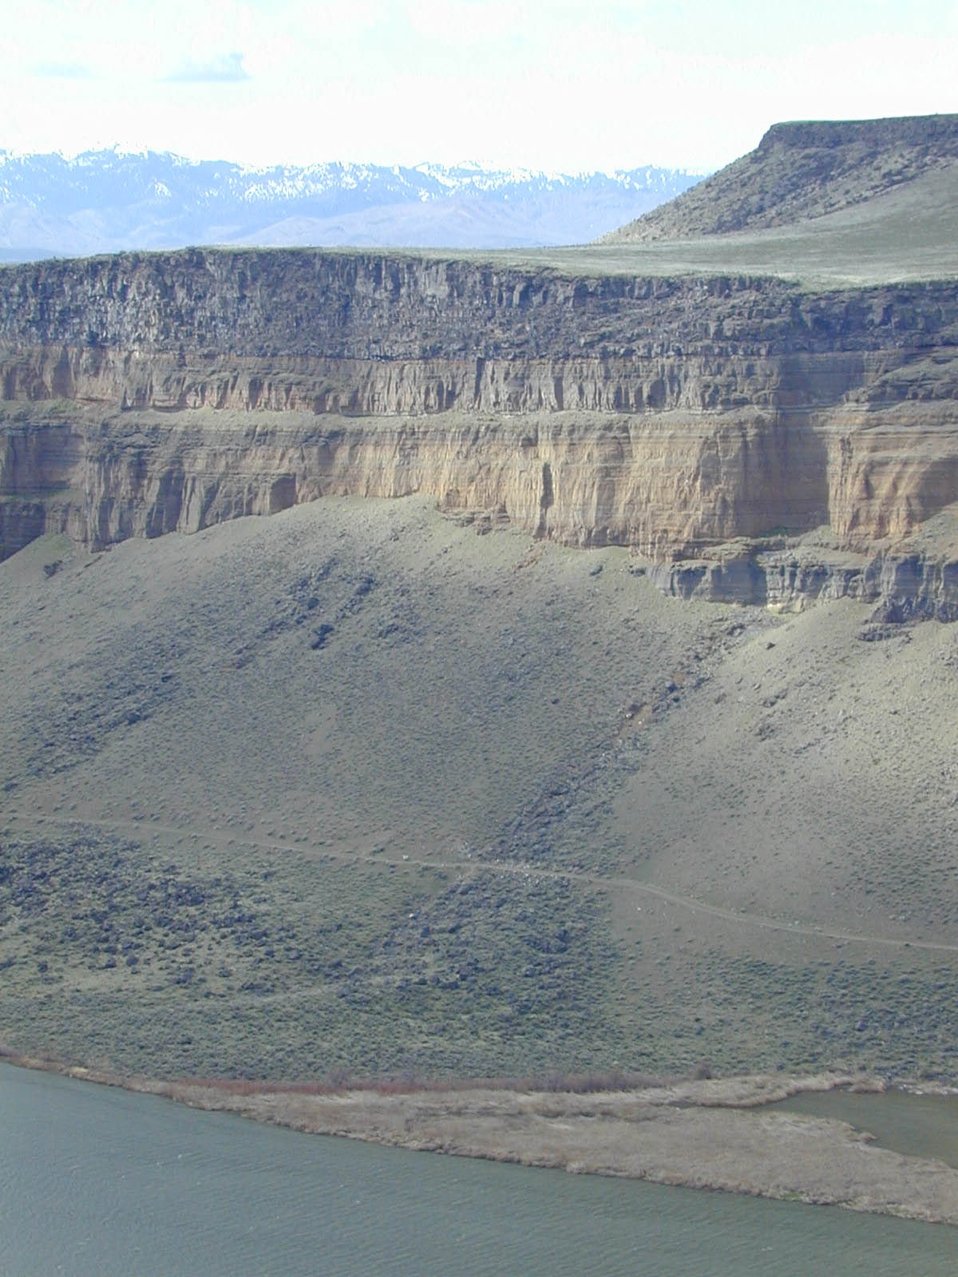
Snake River Birds of Prey National Conservation Area Lower Snake River District LSRD Snake River Canyon Scenic